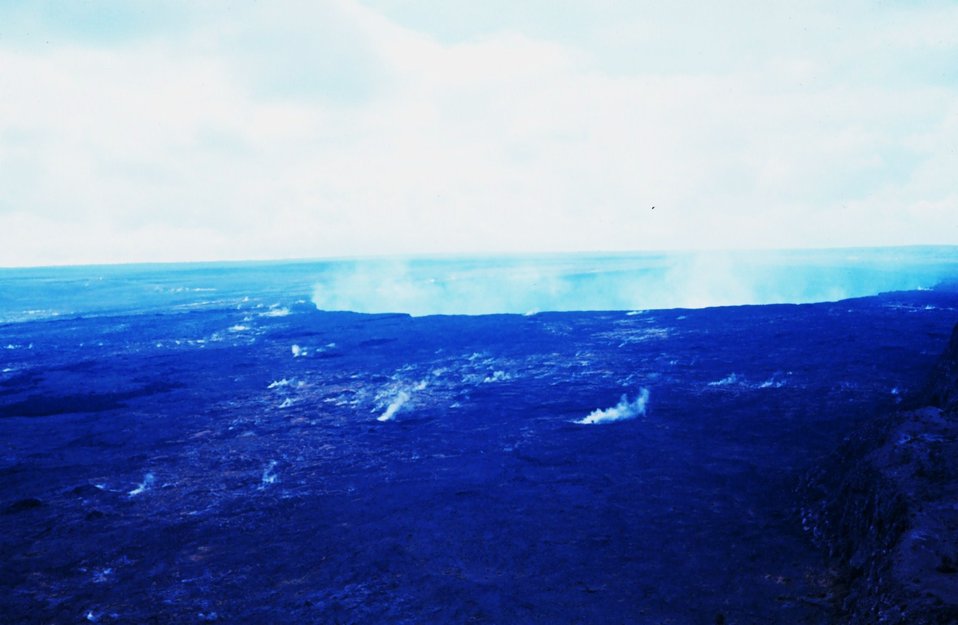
Kilauea Crater at Volcanoes National Park